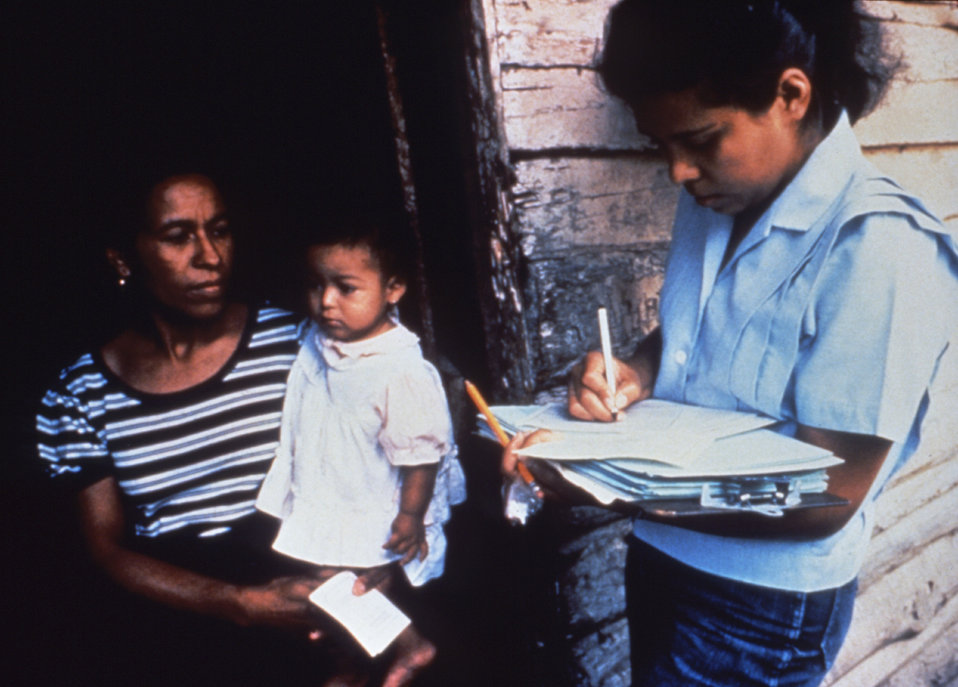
This photograph shows a CDC, Public Health Advisor (PHA) interviewing a resident of a disease stricken community.